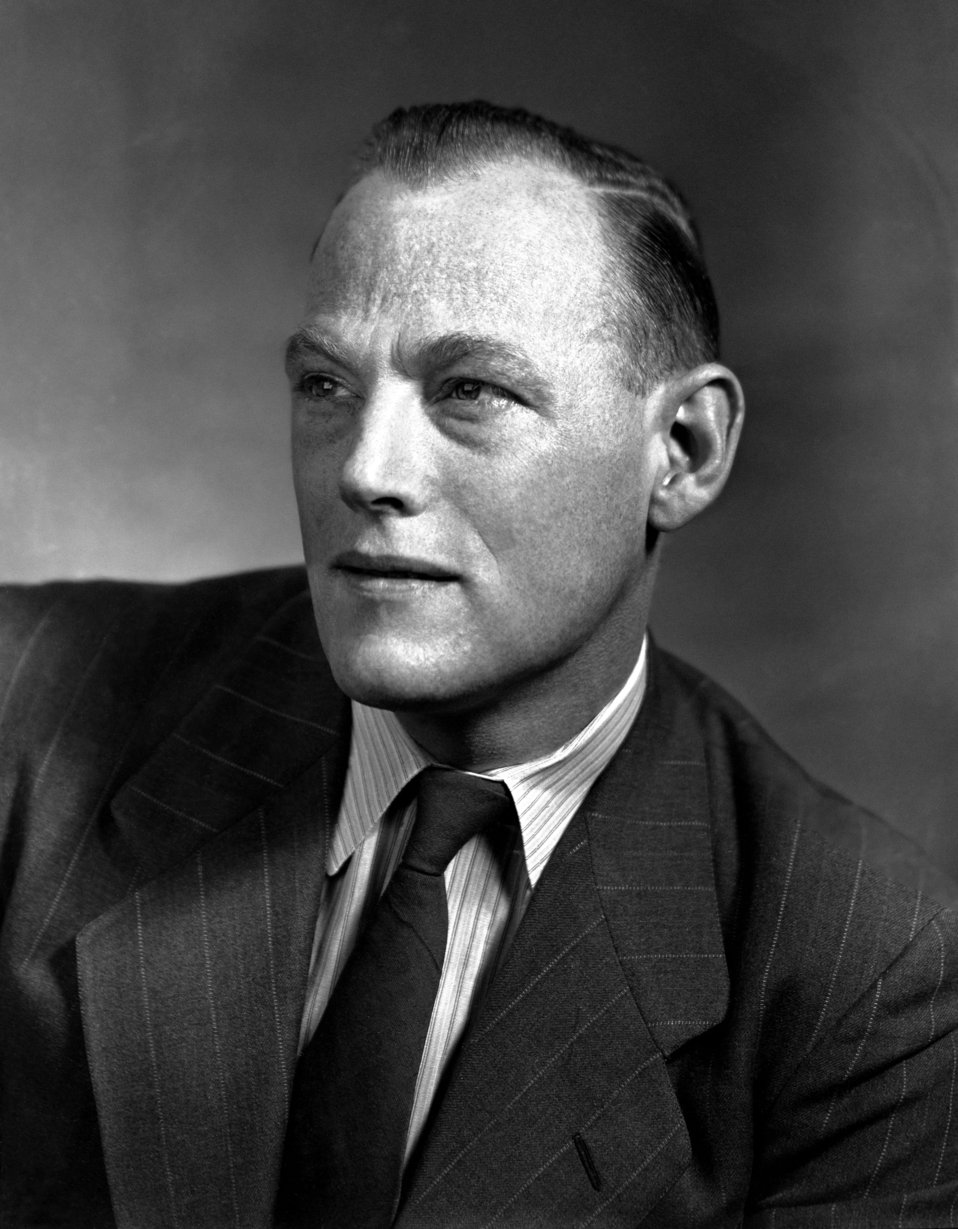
Dr. W. G. Pollard Oak Ridge 1948

5304 DOE photo Ed Westcott 1948 Oak Ridge Tennessee